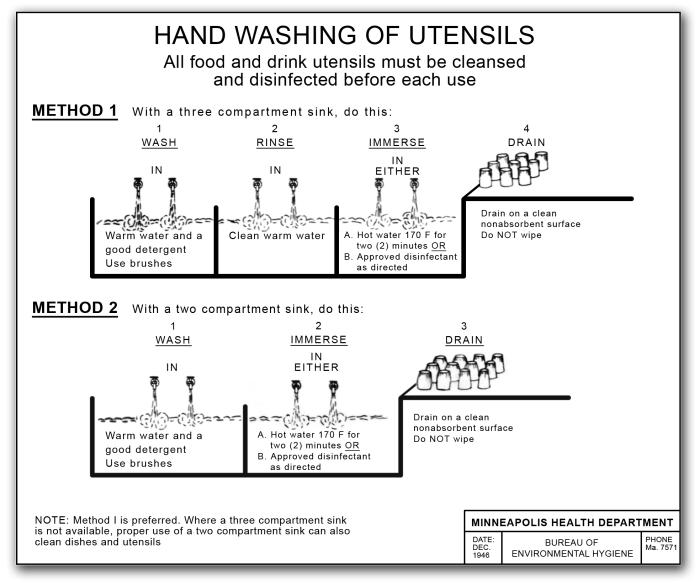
This 1948 image, which had been digitally enhanced, diagrammatically explained the process implemented for washing, rinsing, and sanitizing restaurant dishes, by using a two- or three-compartment stainless steel sink. The process was an example of research on sanitation put into practice. A photograph of a three-compartment stainless steel sink can be seen in PHIL #8587.